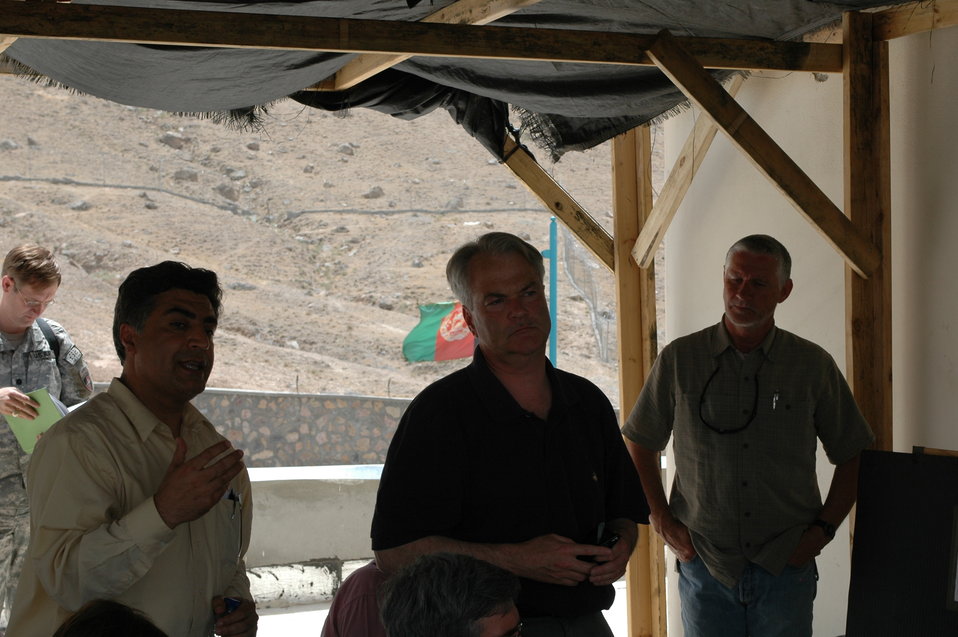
CODEL Berman